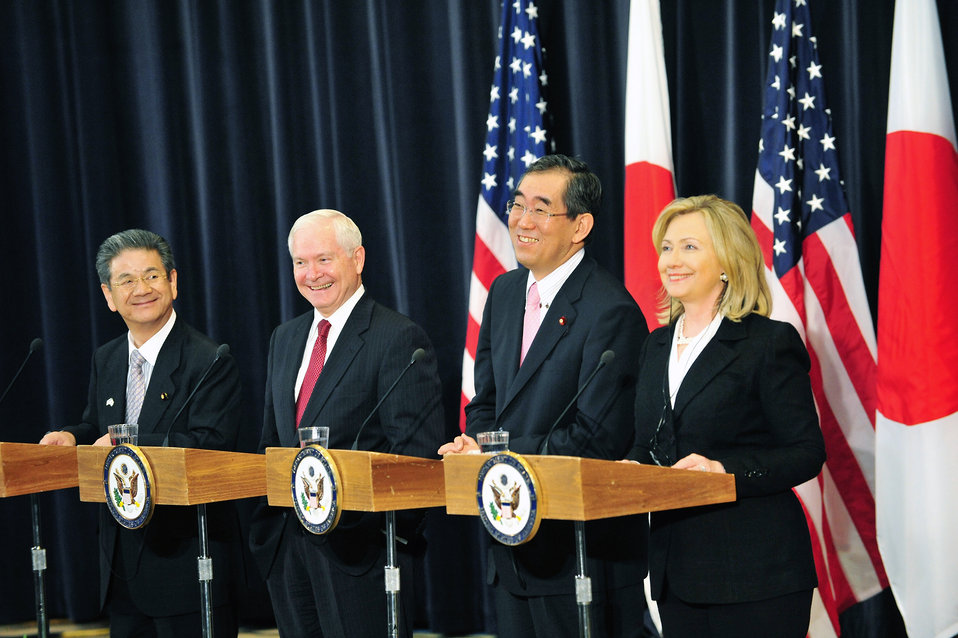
Secretary Clinton, Japanese Foreign Minister Matsumoto, Secretary Gates, and Japanese Defense Minister Kitazawa Hold a Joint Press Conference

U.S. Secretary of State Hillary Rodham Clinton, right; Japanese Foreign Minister Takeaki Matsumoto; center right; U.S. Secretary of Defense Robert Gates, center left; and Japanese Defense Minister Toshimi Kitazawa, left; hold a joint press conference after the U.S.-Japan Security Consultative Committee meeting, known as the 2 2, at the U.S. Department of State in Washington, D.C., on June 21, 2011.